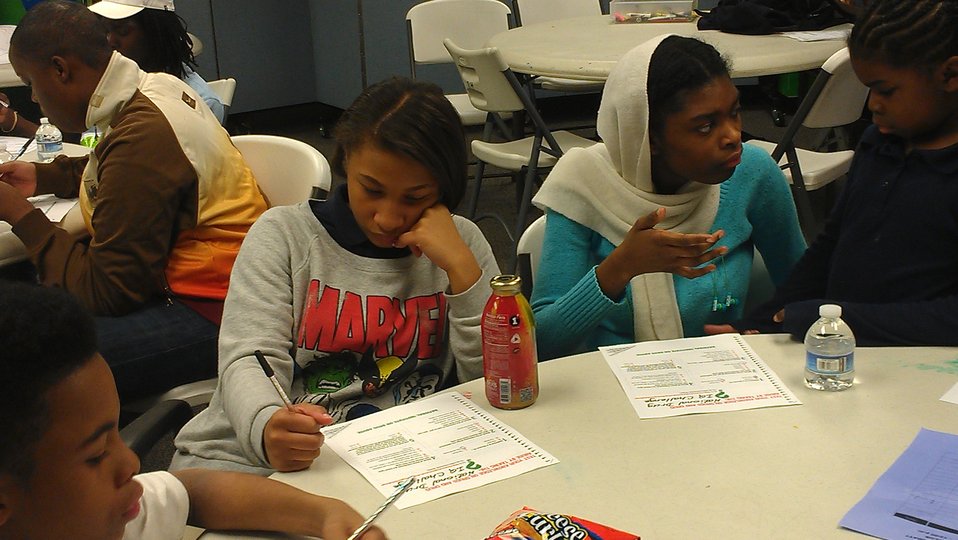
Washington, D.C. Youth, NDFW 2013

Sasha Bruce Youthwork, Inc. sponsor 2013 NDFW events for youth in Prevention Centers in Wards 5 & 6, Washington, D.C.